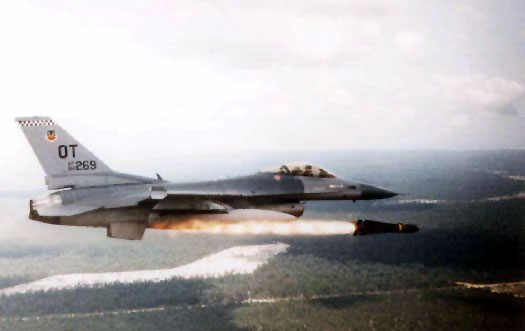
Maverick launch

EGLIN AIR FORCE BASE, Fla. -- An F-16 Fighting Falcon fires an AGM-65 Maverick in a training mission.